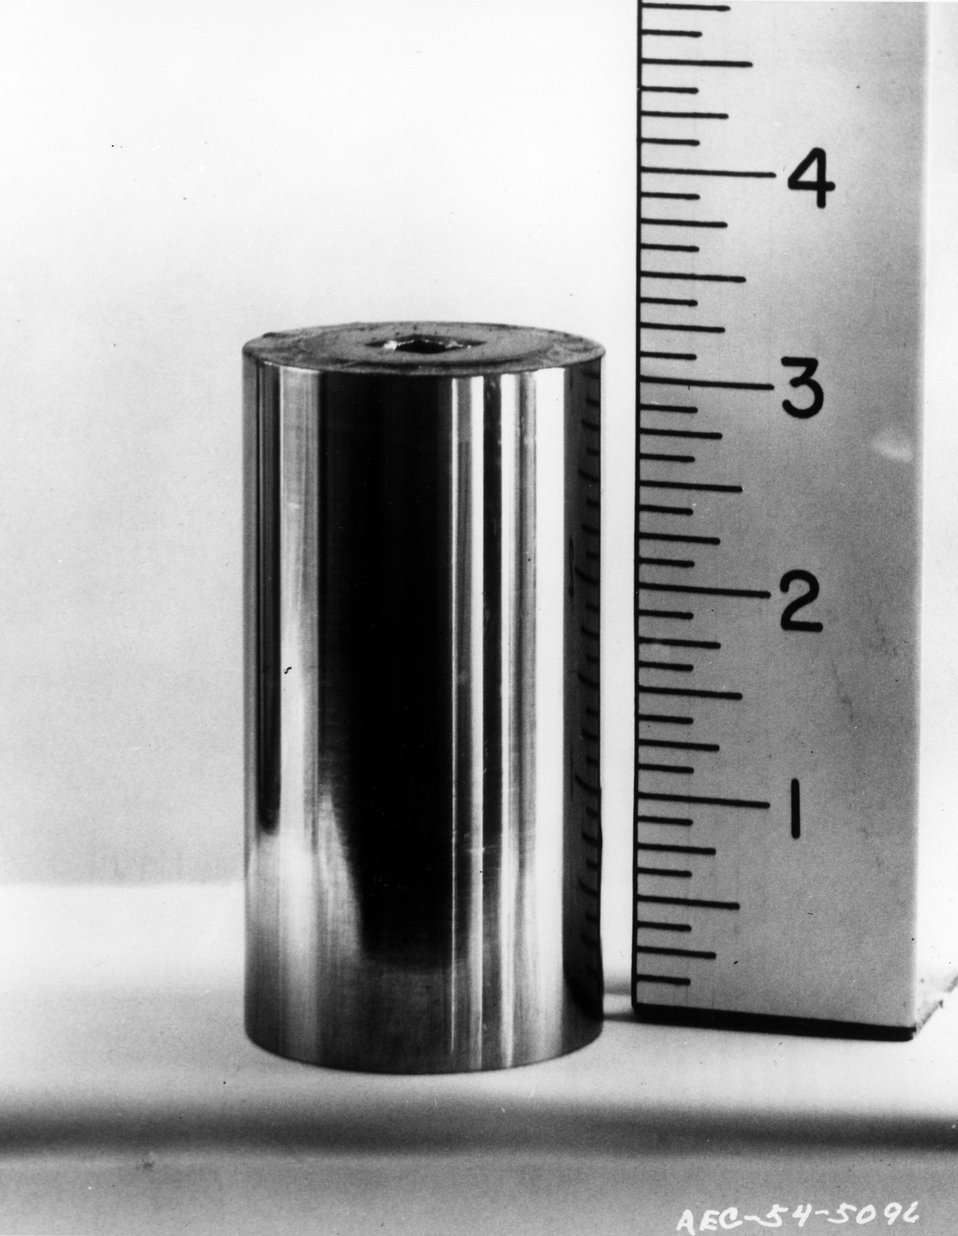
New cesium-137 radiation source as it appears in its final state. c. 1954